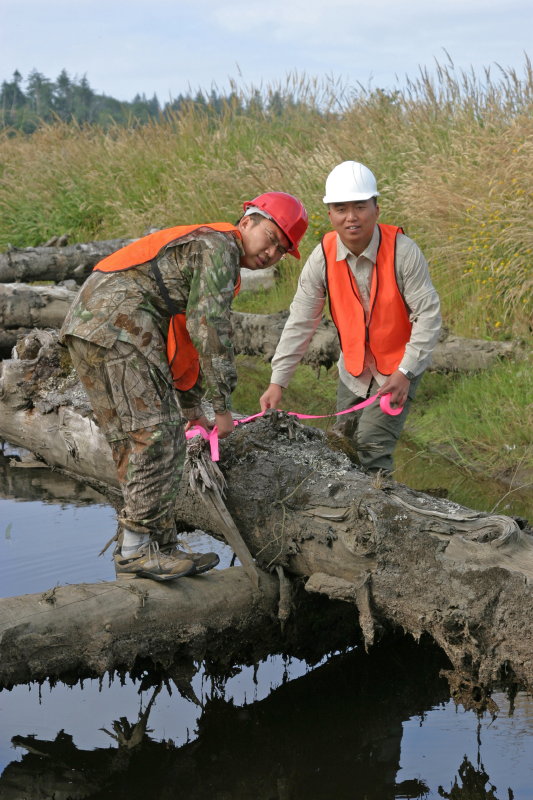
Xu and Jia place wood in a constructed tidal channel.